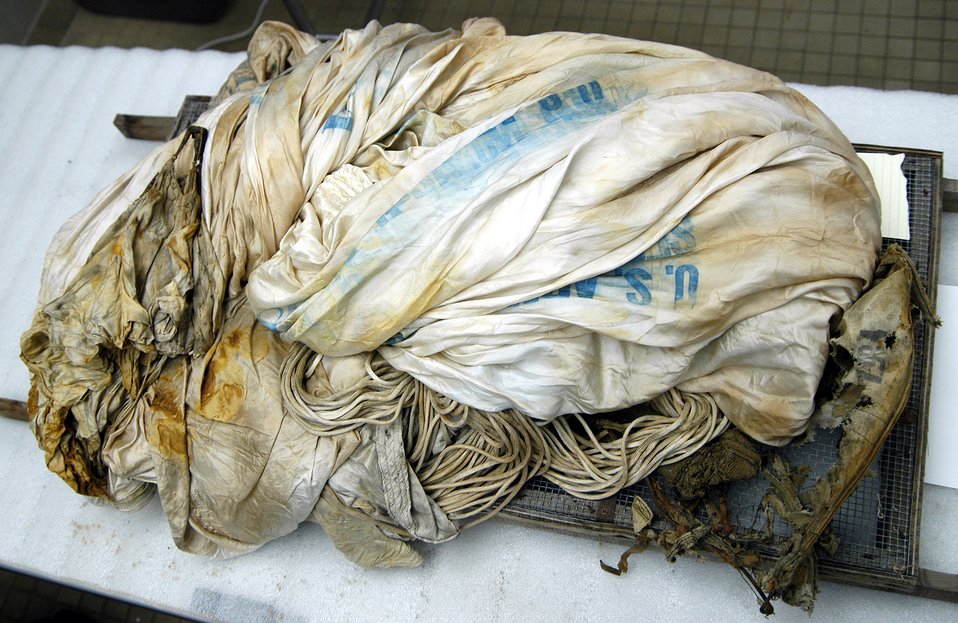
Frozen Airman

HICKAM AIR FORCE BASE, Hawaii (AFPN) -- Joint POW/MIA Accounting Command scientists are working to identify an Airman who was found Oct. 16 on Mount Mendel in Kings Canyon National Park, Calif. The unidentified Airman arrived at JPAC Oct. 24 still wearing a World War II-era parachute, with a comb, various coins and other personal effects in his pockets. Investigators at JPAC searched the records of men lost during World War II and found that between 25 and 30 military planes crashed on training missions in California during these years. They have narrowed the list of possible Airmen to four who disappeared during a training mission on Nov. 18, 1942.